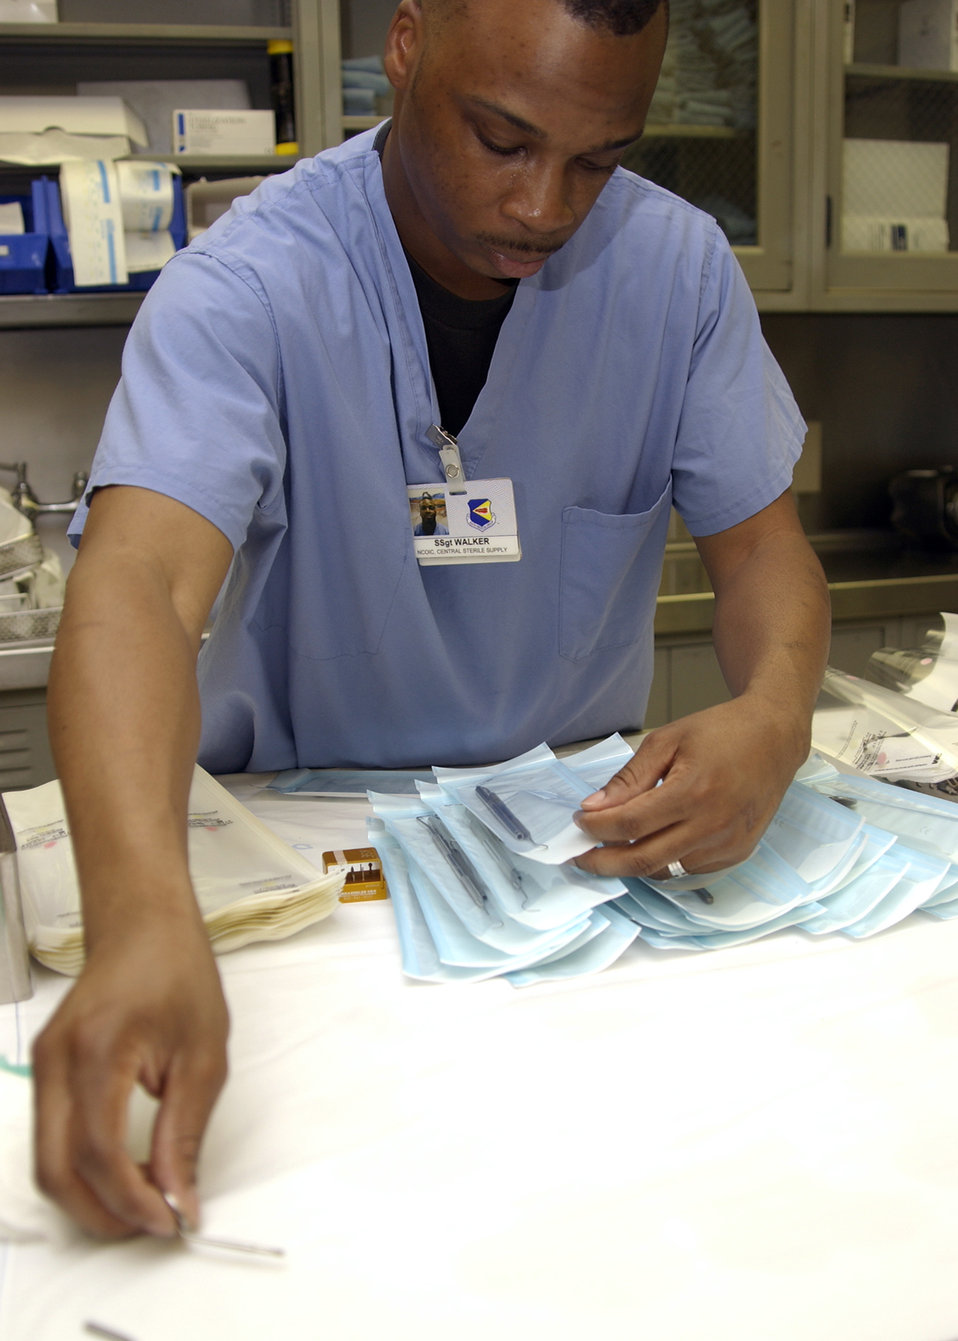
Armed to the teeth

Staff Sgt. Bobby Walker sorts dental instruments and prepares them for sterilization at Davis-Monthan Air Force Base, Ariz., on Aug. 10. The 355th Dental Squadron provides services for more than 7,000 active-duty Airmen at Davis-Monthan so that they may remain mission ready.